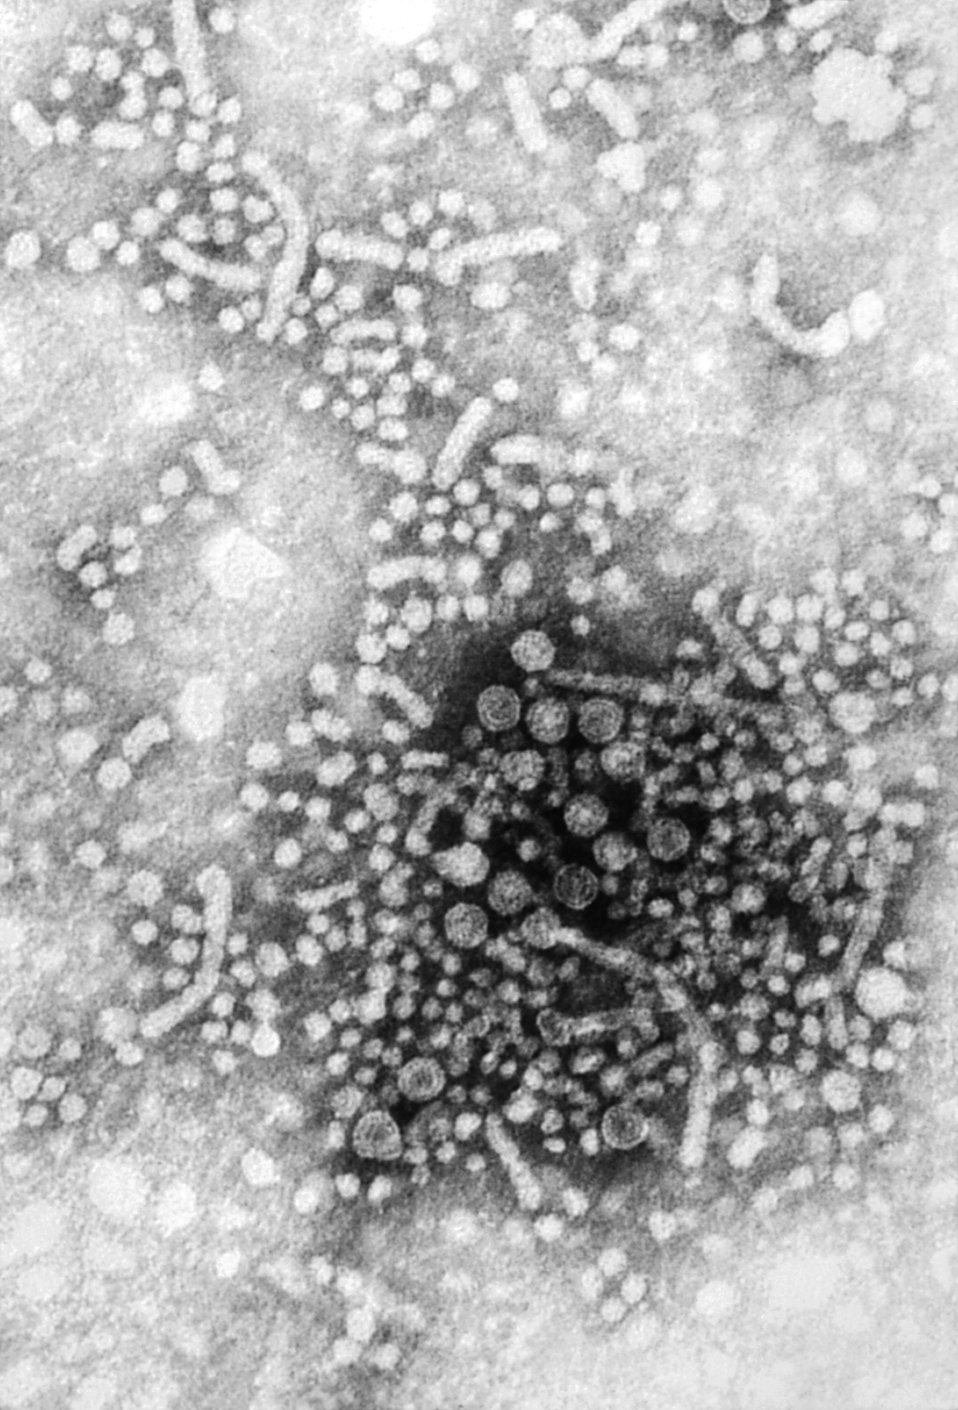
This negatively-stained transmission electron micrograph (TEM) revealed the presence of numerous hepatitis B virus (HBV) virions, also know as Dane particles. HBV contains a genome of DNA, and is a member of the family of viruses known as Hepadnaviridae. It is the cause of a serious disease that attacks the liver, and an infection that can be lifelong, known as cirrhosis (scarring) of the liver, liver cancer, liver failure, and death. Hepatitis B vaccine is available for all age groups to prevent hepatitis B virus infection.